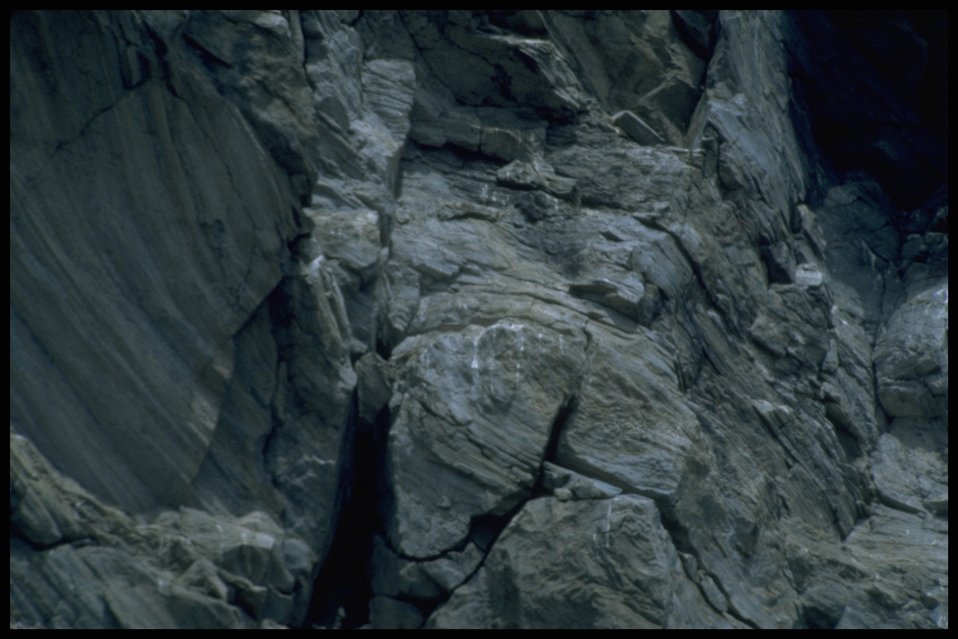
Lakeview District rock formation.